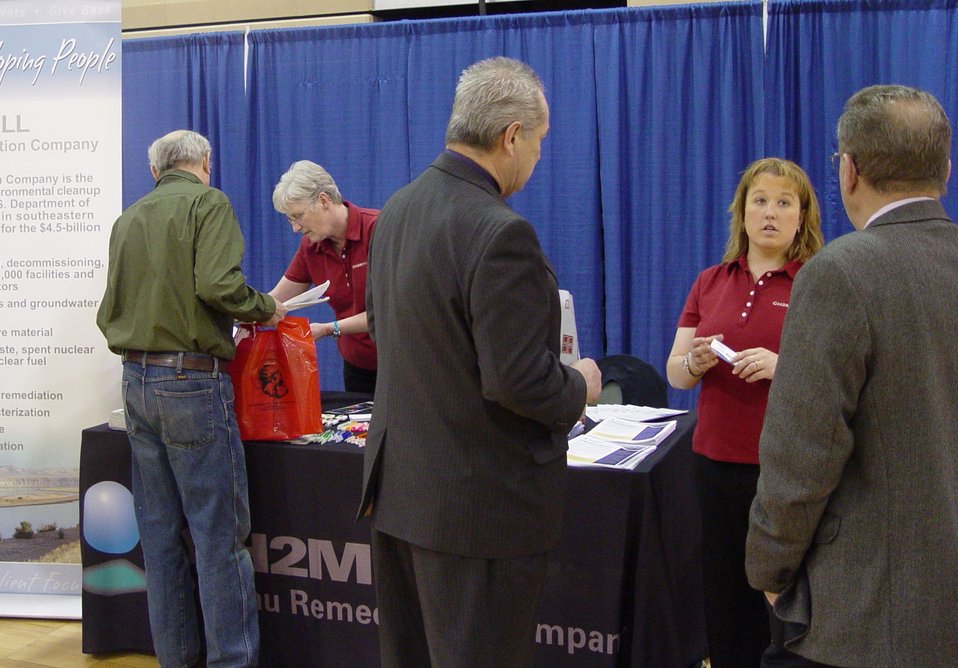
Contractor expand career outreach for Hanford Site

CH2M HILL Plateau Remediation Company (CH2M HILL) is reaching out (2010) to provide career development and hiring opportunities made possible by the American Recovery and Reinvestment Act (Recovery Act) to the Tribal Nations local to the Hanford Site in southeast Washington State.